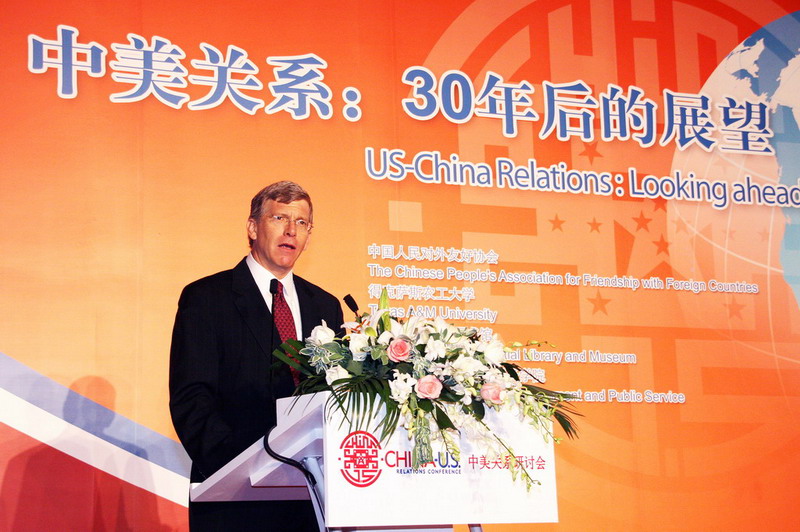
Deputy Secretary Poneman speaks at the 2009 'China-U.S. Relations Conference' in Beijing.